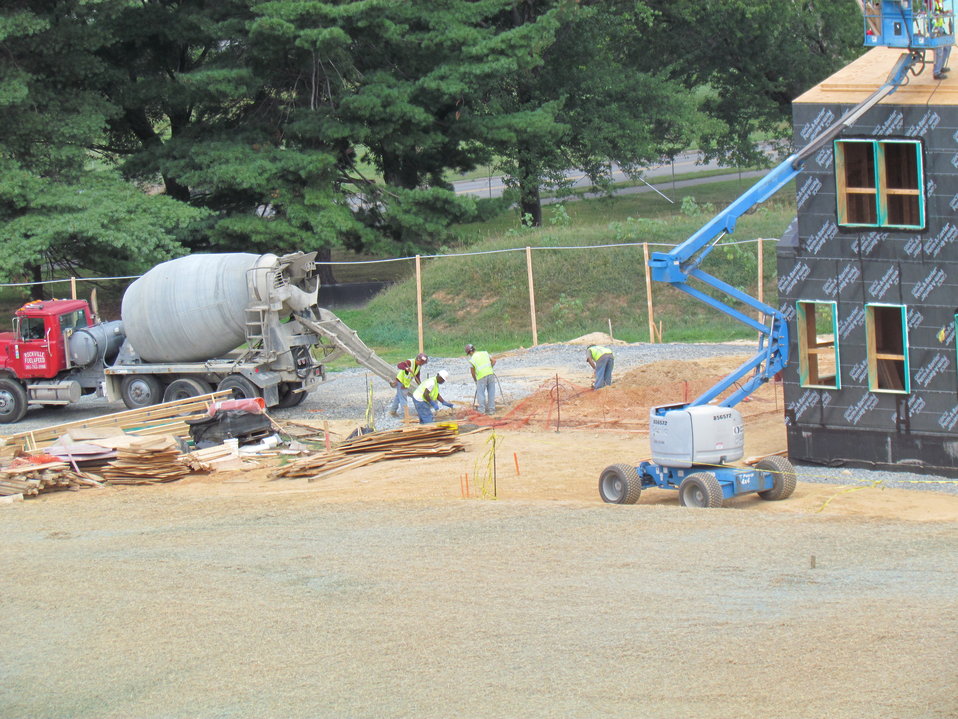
Net-Zero Energy Residential Test Facility - Workmen pouring foundation for detached garage that will house instrumentation and monitoring equipment for facility.